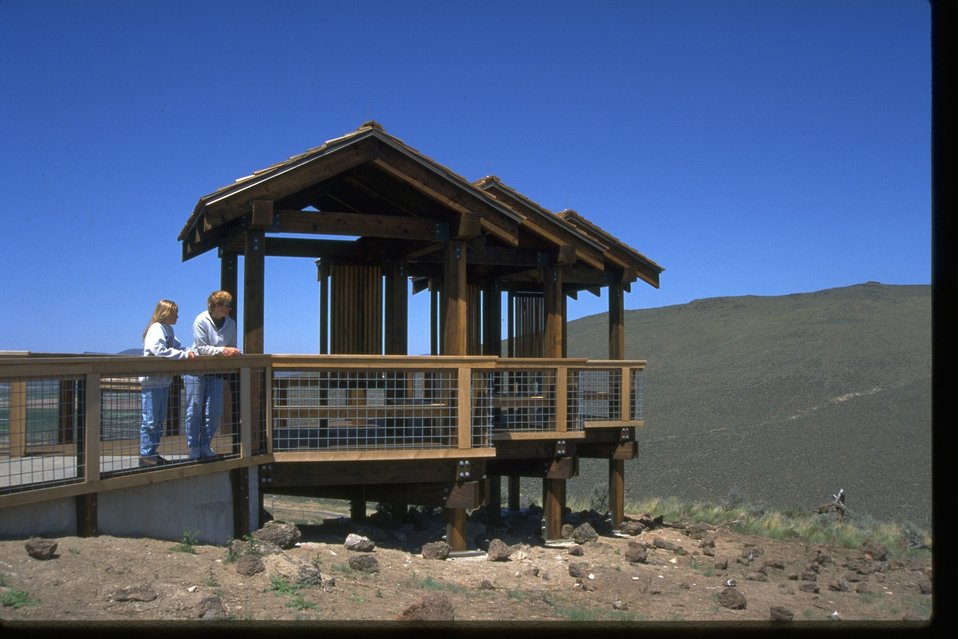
Trail ramada at the NHOTIC.